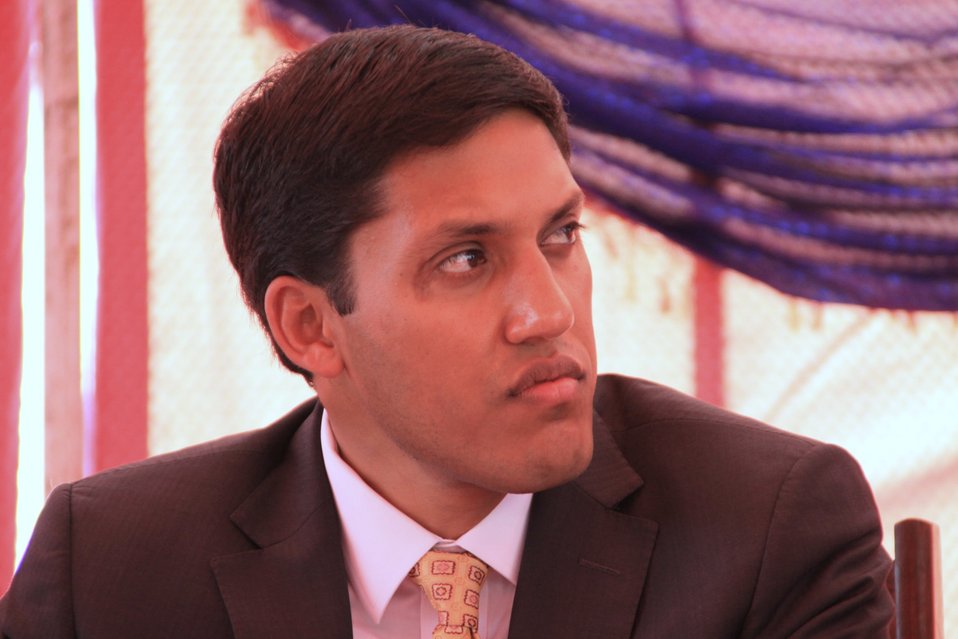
Baddam Bagh Farm